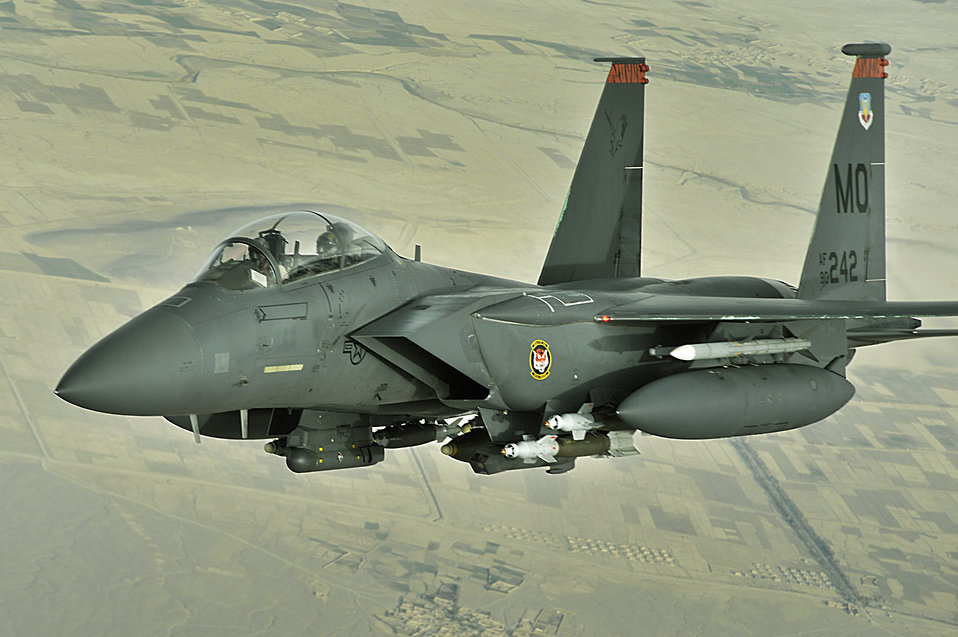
Controlling the sky

An F-15E Strike eagle conducts a mission over Afghanistan on Nov. 7. The F-15E Strike Eagle is a dual-role fighter designed to perform air-to-air and air-to-ground missions. An array of avionics and electronics systems gives the F-15E the capability to fight at low altitude, day or night, and in all weather.